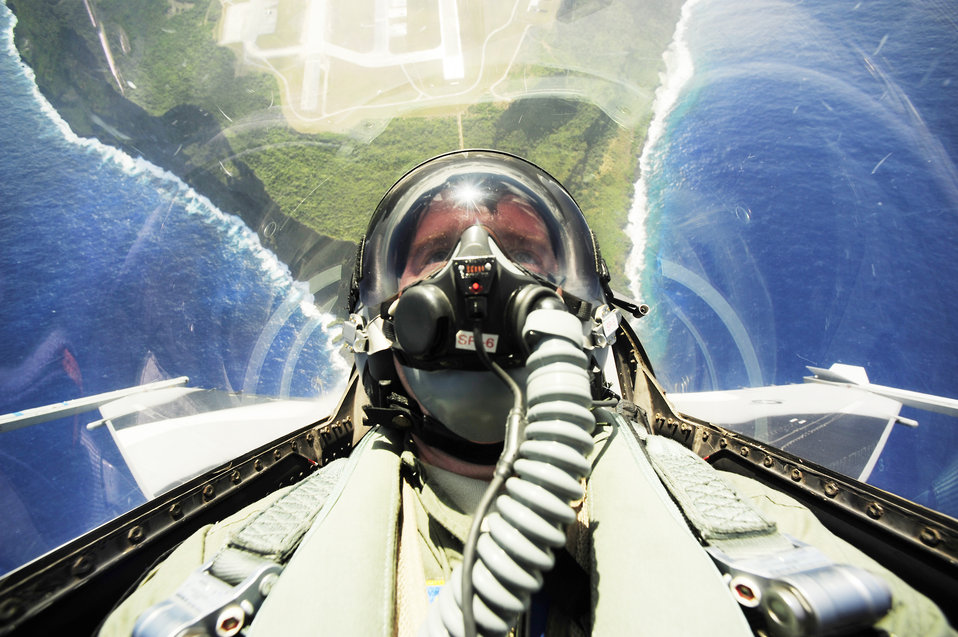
Let's go UP!

An F-16 Fighting Falcon pilot conducts an unrestricted vertical climb from Andersen Air Force Base, Guam, during Exercise Cope North, Feb. 15, 2010. The U.S. Air Force and the Japan Air Self-Defense Force conduct the exercise annually at Andersen to increase combat readiness and interoperability.